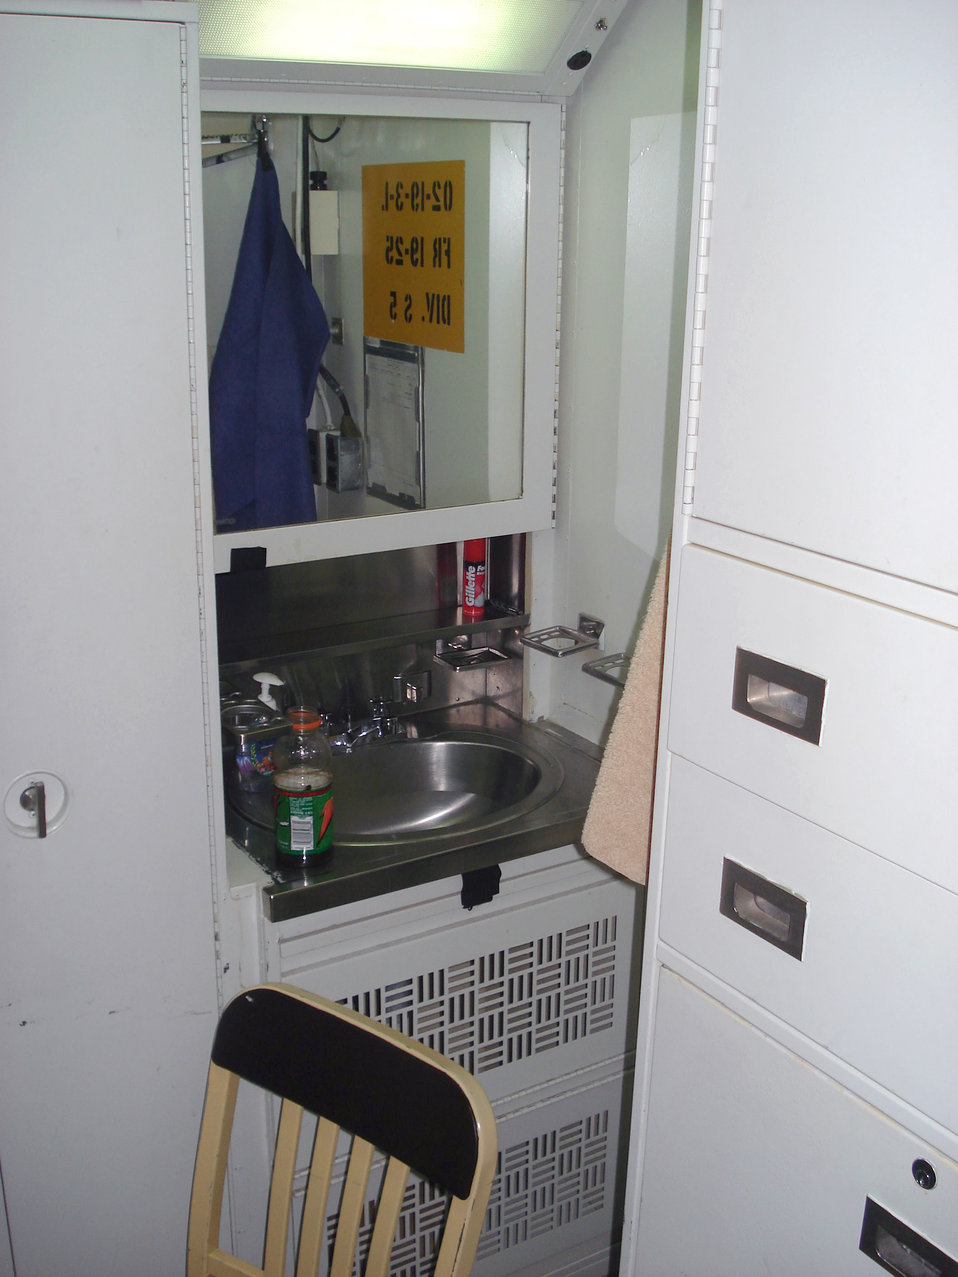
This image depicts the sink in the corner of a 4-man cabin in the officer's berthing on the USS Kearsarge (LHD 3), an amphibious assault ship that was supporting the Caribbean phase of operation Continuing Promise 2008, an equal-partnership mission between the United States, Canada, the Netherlands, Brazil, Nicaragua, Panama, Colombia, Dominican Republic, Trinidad and Tobago and Guyana.